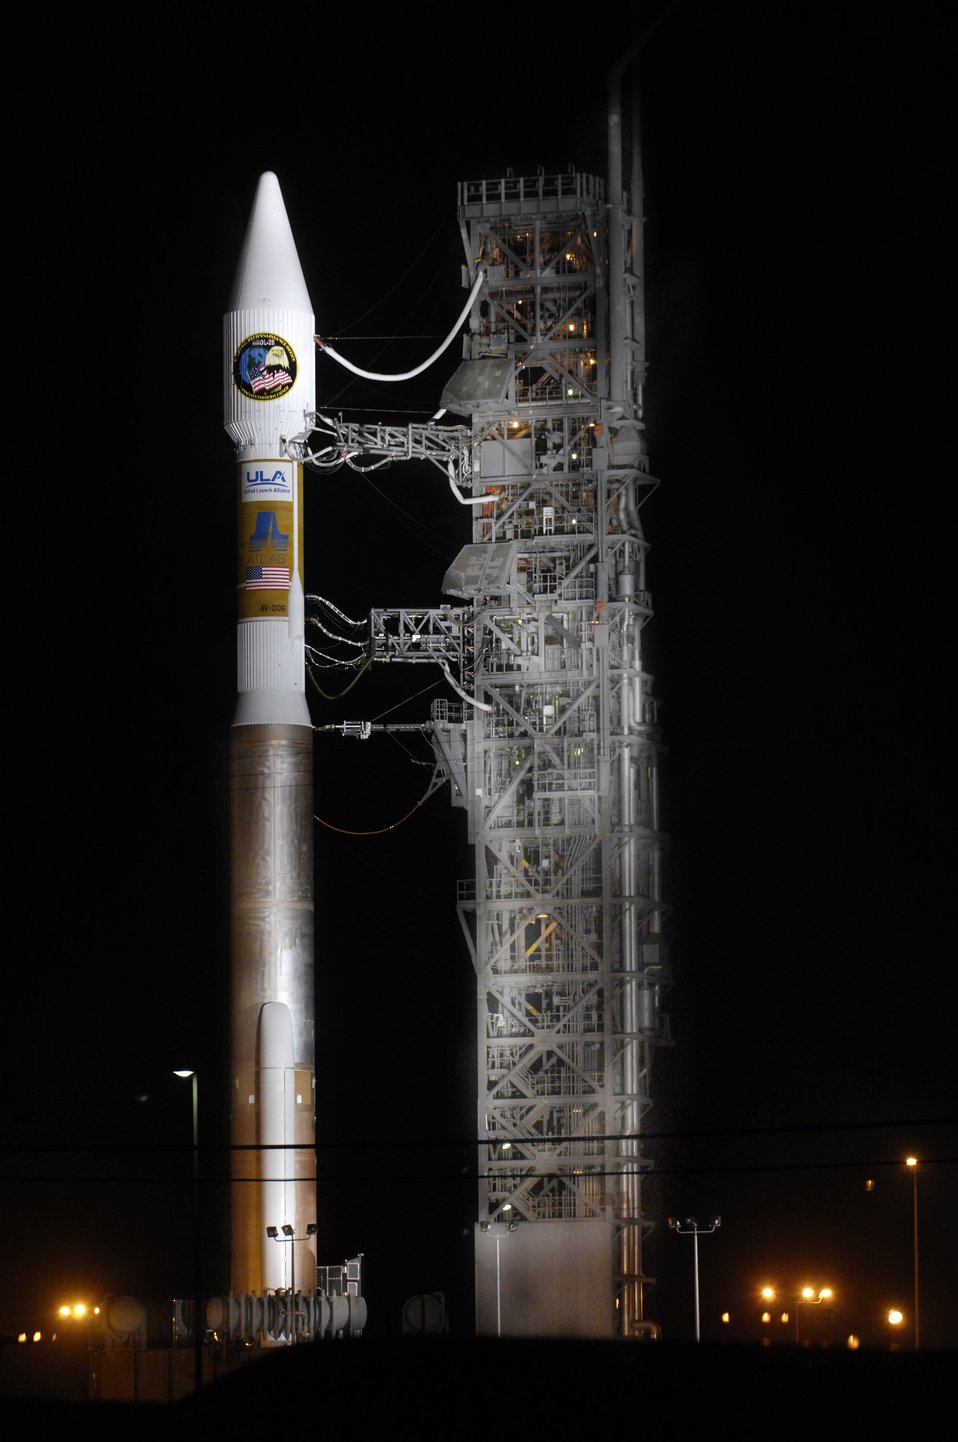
Vandenberg Airmen launch Atlas V rocket

An Atlas V stands on Space Launch Complex-3 during its mobile servicing tower rollback on March 12. The Atlas launched at 3:01 a.m. PDT March 13 at Vandenberg Air Force Base, Calif. It carried a National Reconnaissance Office payload and was the first Atlas V to launch from the West Coast.